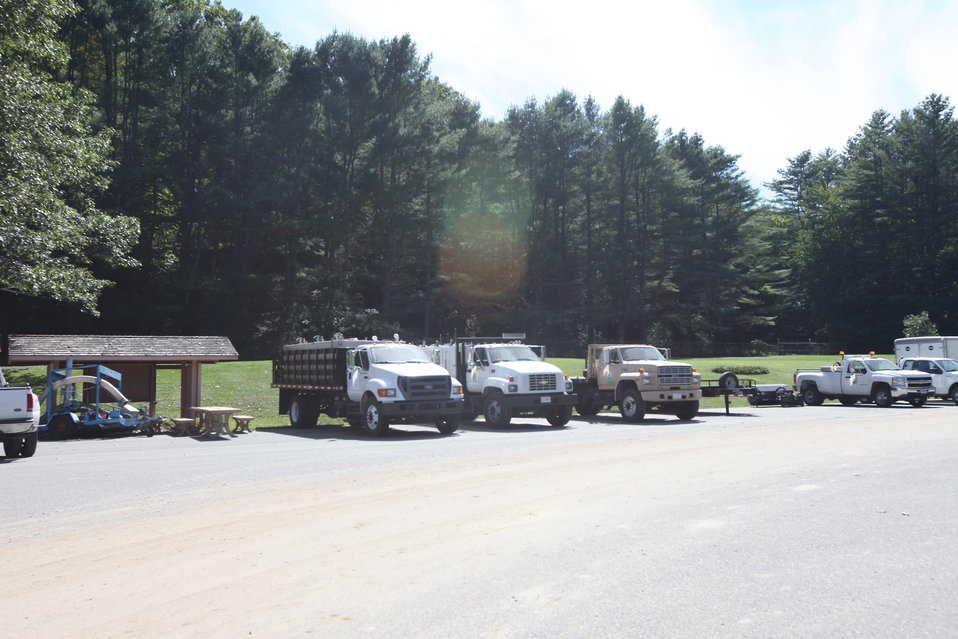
Storm damage relief at White River NFH

Heavy equipment operators came from other USFWS stations to help clean up.